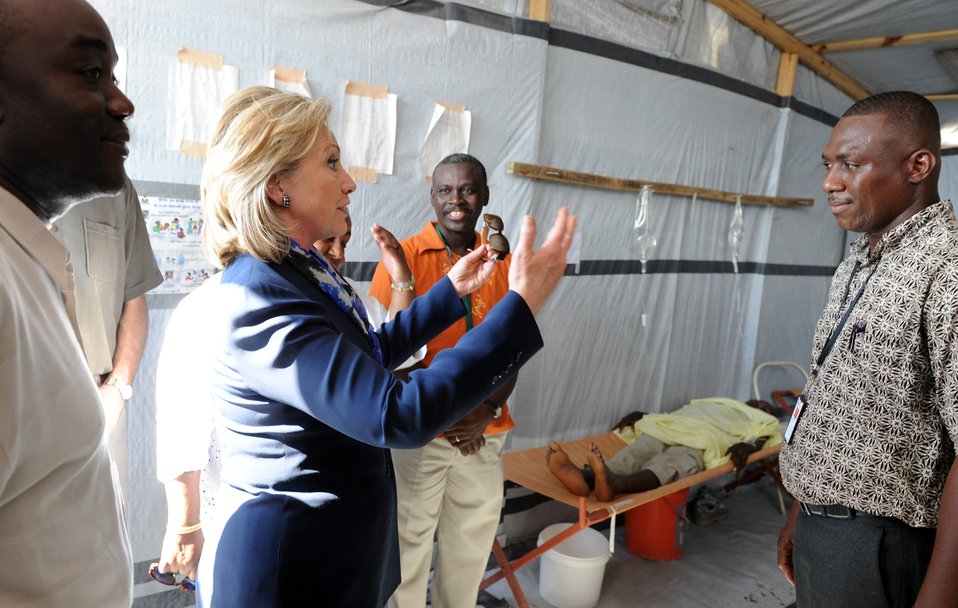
Secretary Clinton Speaks With Staff at a USAID Cholera Treatment Center

U.S. Secretary of State Hillary Clinton speaks with the staff at a USAID cholera treatment center on January 30, 2011, in Port-au-Prince, Haiti.